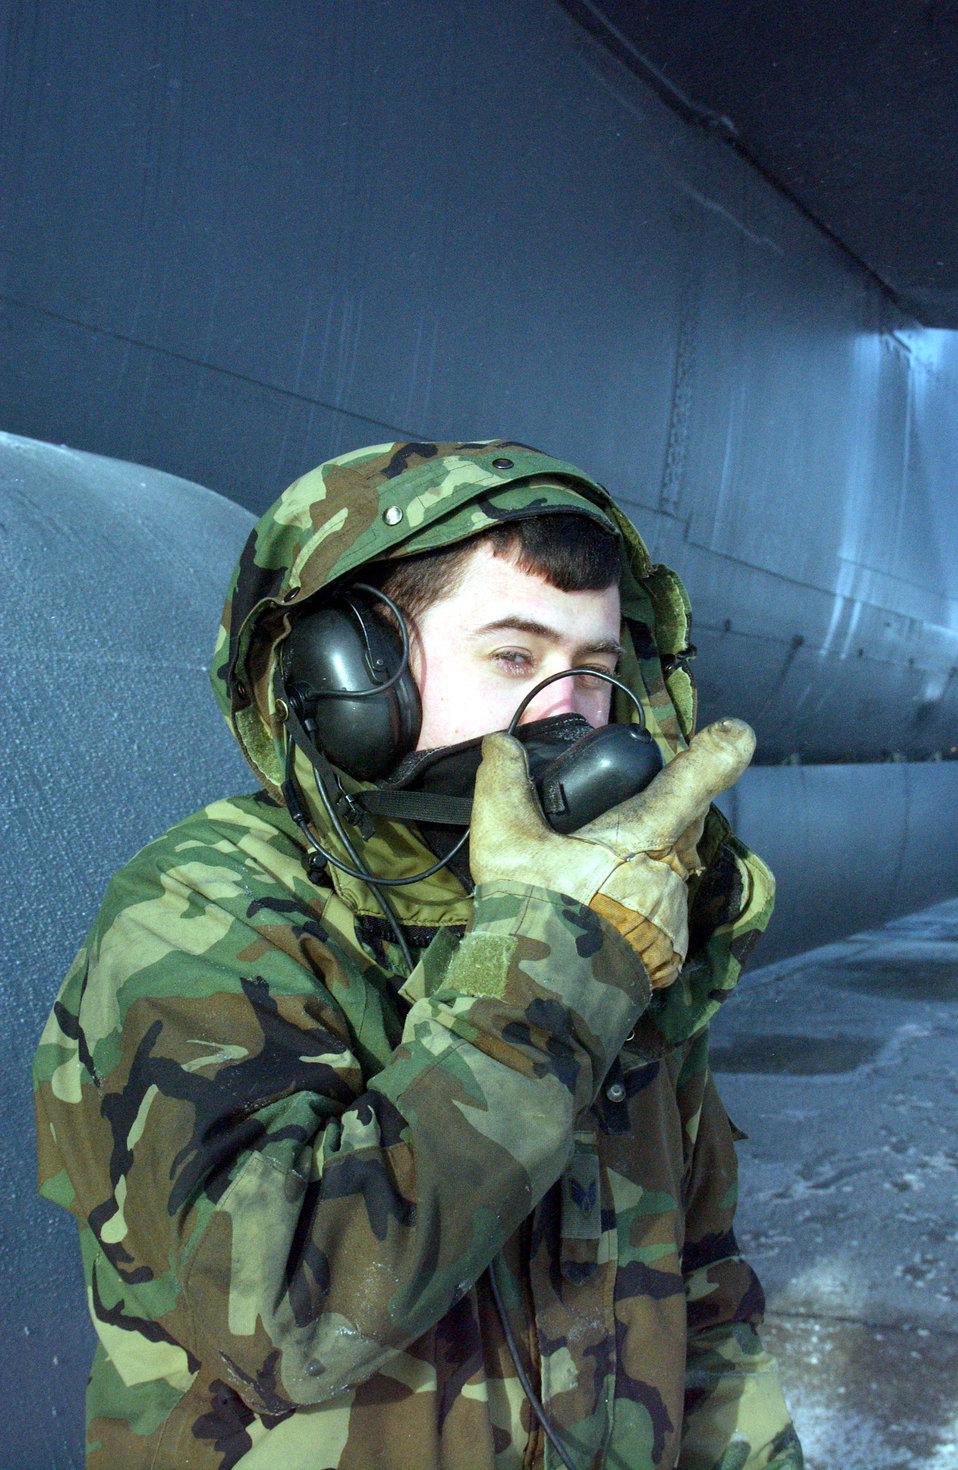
Cold-weather mission

MINOT AIR FORCE BASE, N.D. -- Senior Airman Jason Logan talks to the crew inside a B-52H Stratofortress before takeoff here Jan. 27. The mission was flown despite weather conditions of minus 45 degrees with wind gusts of 27-plus mph. Airman Logan is a crew chief with the 5th Aircraft Maintenance Squadron.